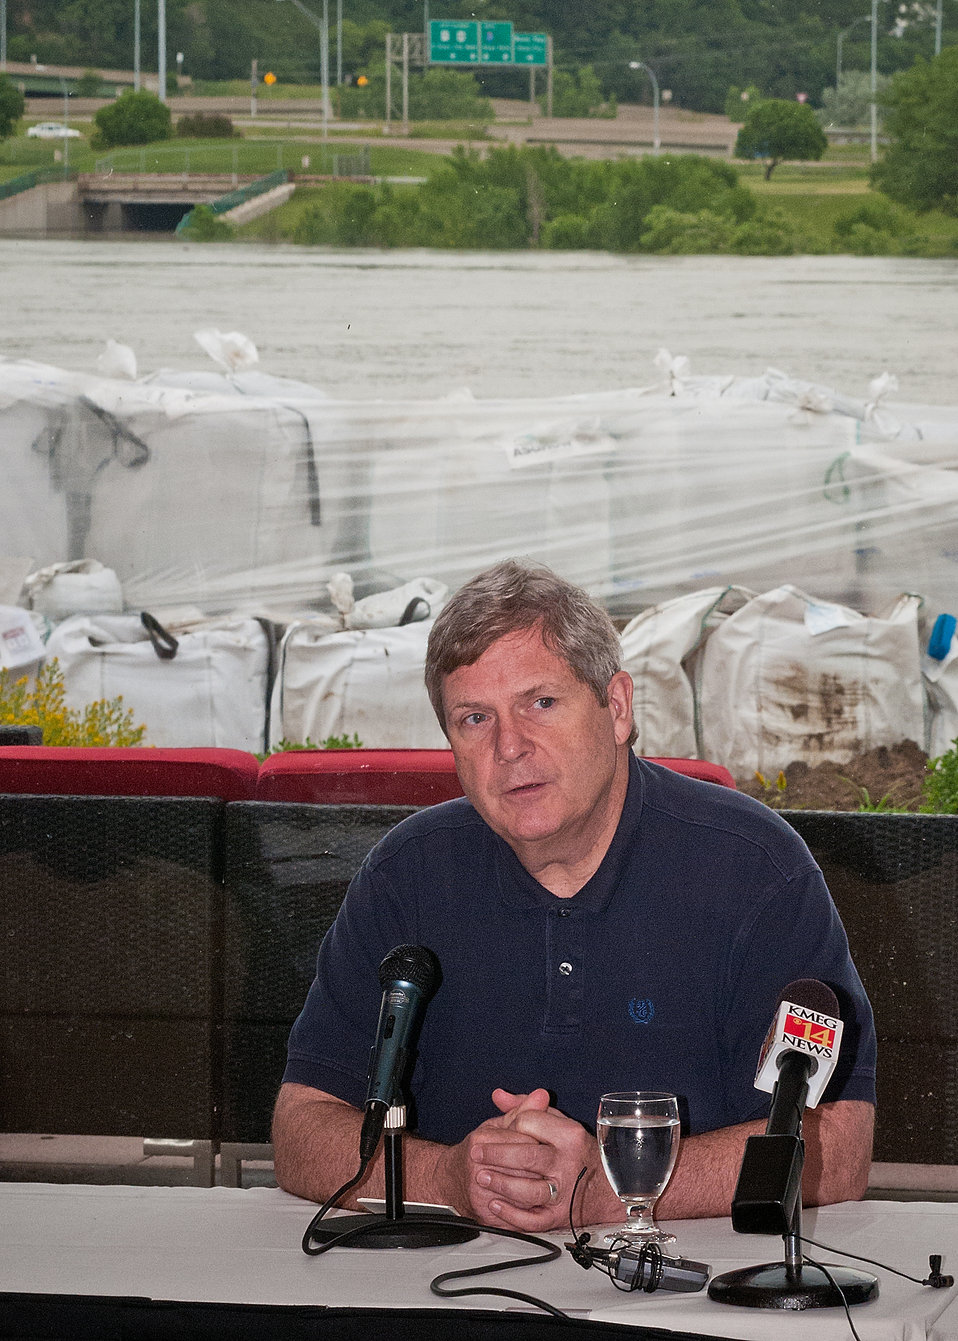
Agriculture Secretary Tom Vilsack held a town hall meeting at the Marina Inn in South Sioux City, Nebraska Friday, June 17, 2011, on the floodwaters along the Missouri River affecting Iowa and Nebraska. The goal of the meeting with the producers and community leaders is to get a firsthand look and provide information back to Washington to better deliver disaster programs quickly to effectively respond to this disaster. The meeting provided the information necessary for USDA agencies to implement programs to assist producers as they assess recovery efforts. USDA administers many programs to assist with recovery in rural areas reeling from natural disasters.